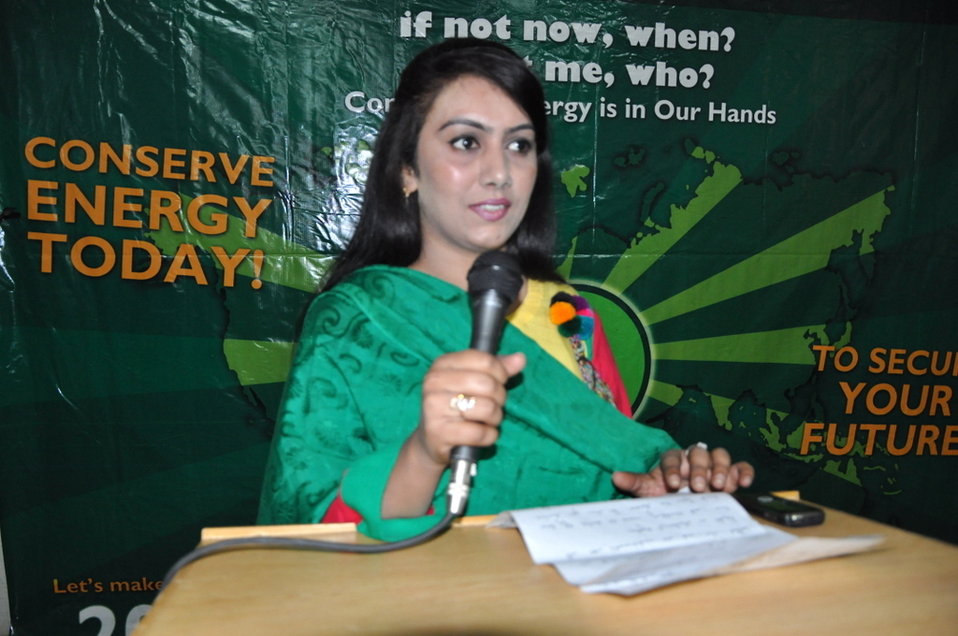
USAID Power Distribution Program-Energy Conservation Seminar Beaconhouse School System, Multan